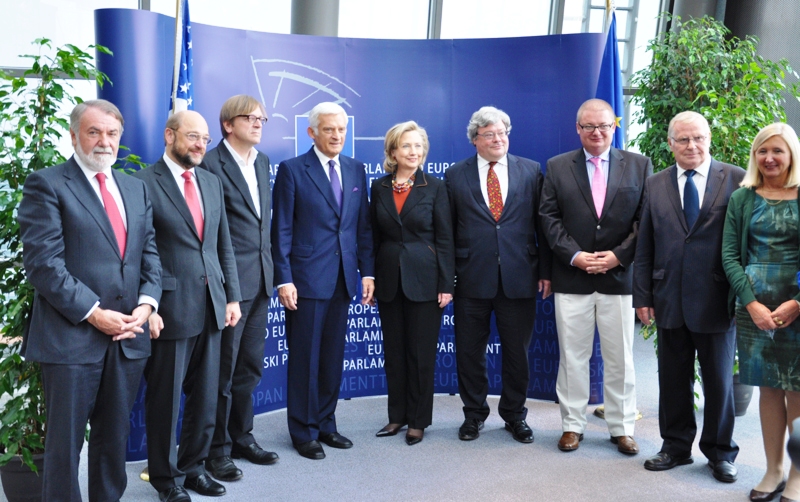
Secretary Clinton, European Parliament President Buzek , and the Conference of Presidents Pose for a Photo

U.S. Secretary of State Hillary Rodham Clinton and the President of European Parliament Jerzy Buzek (center) pose for a photo with the Conference of Presidents on the top floor of the European Parliament building in Brussels, Belgium, on October 14, 2010.